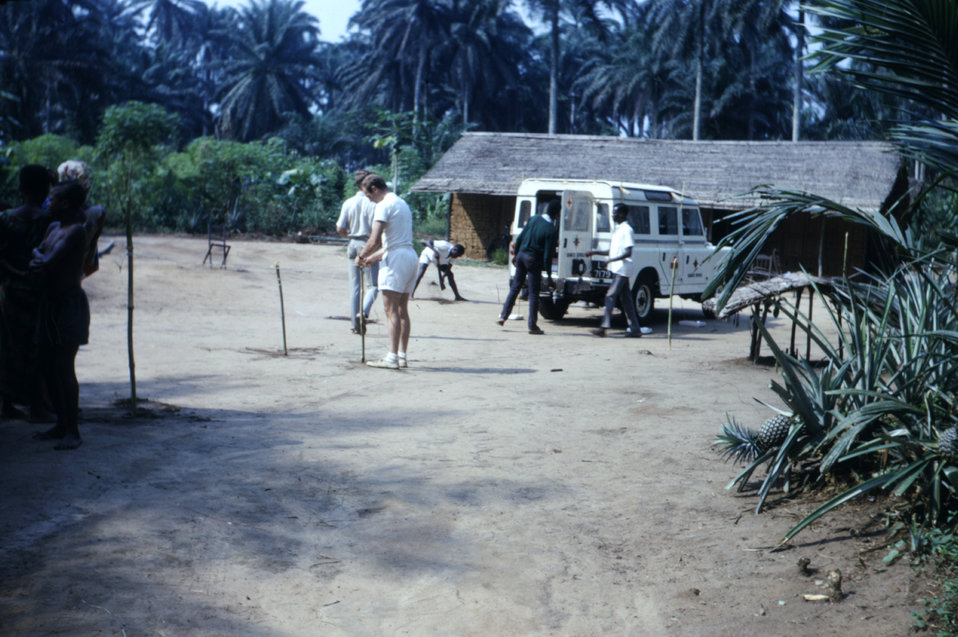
This 1968 photograph, which was taken during CDC's refugee relief effort at the time of the Nigerian-Biafran civil war, showed members of the American Friends Service Committee (AFSC) who were setting up a dry food distribution area at a relief camp in southeast Nigeria.